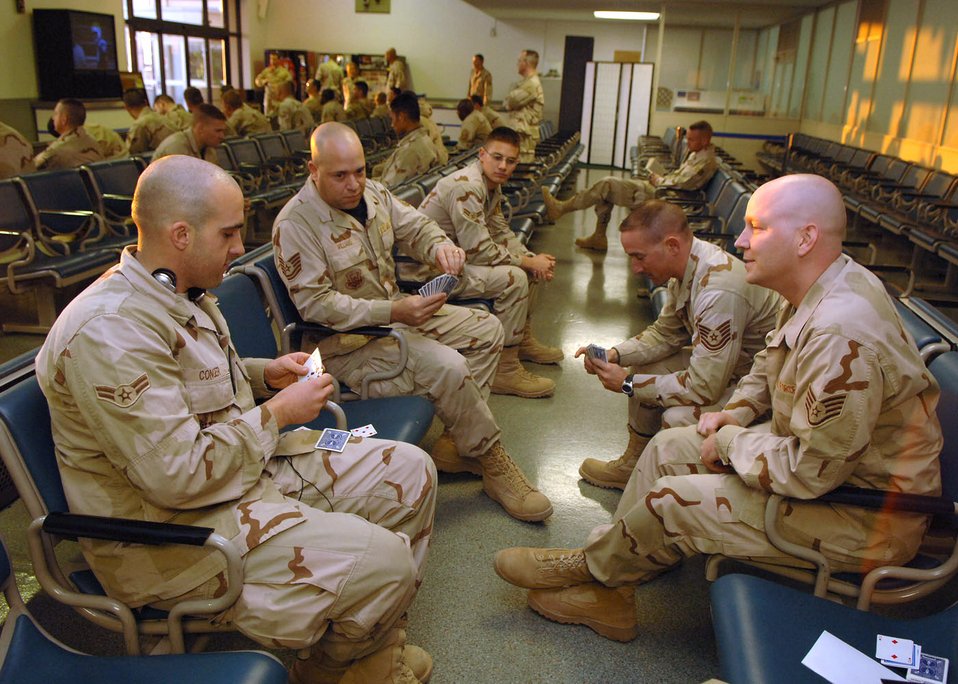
Coming home

(From left) Airman 1st Class Thomas Conger, Tech. Sgt. Steve Williams, Tech. Sgt. Thomas Badgero and Staff Sgt. Corey Proulx play a card game at the Yokota Air Base, Japan, passenger terminal Jan. 23 while waiting for a flight to return home after a deployment to the Middle East. The Airmen are assigned to the 354th Logistics Readiness Squadron at Eielson Air Force Base, Alaska.